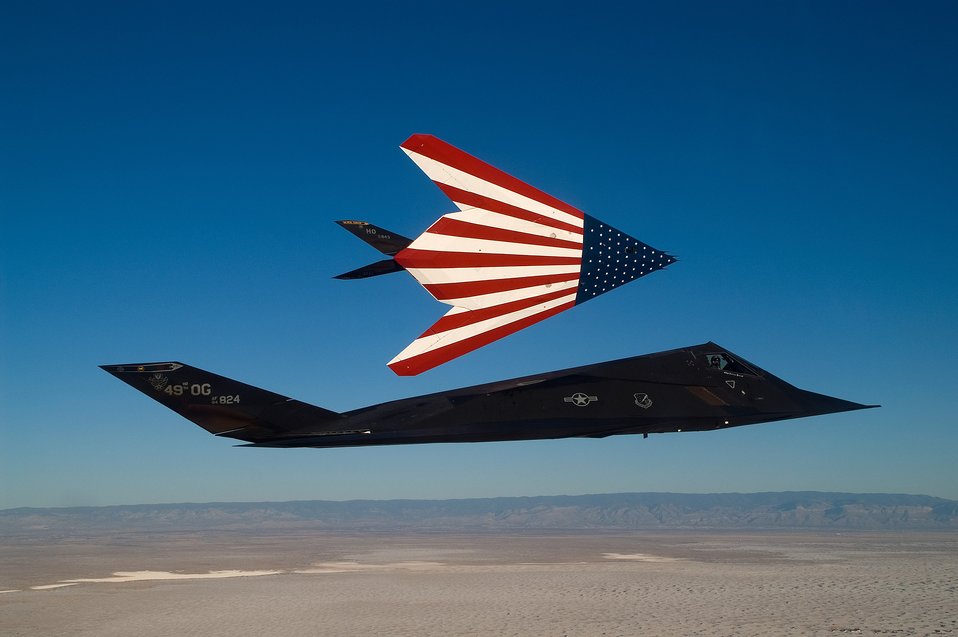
Stealthy stars and stripes

Two specially painted F-117 Nighthawks fly on one of their last missions. The F-117s were retired March 11 in a farewell ceremony at Wright-Patterson Air Force Base, Ohio.